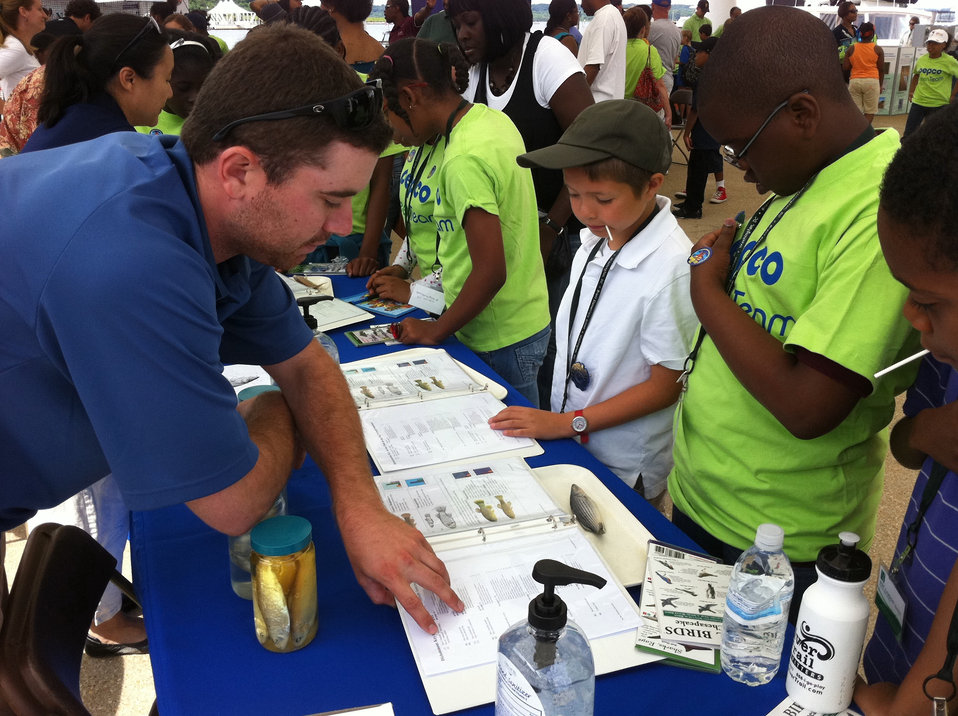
Learning how to identify different types of fish.